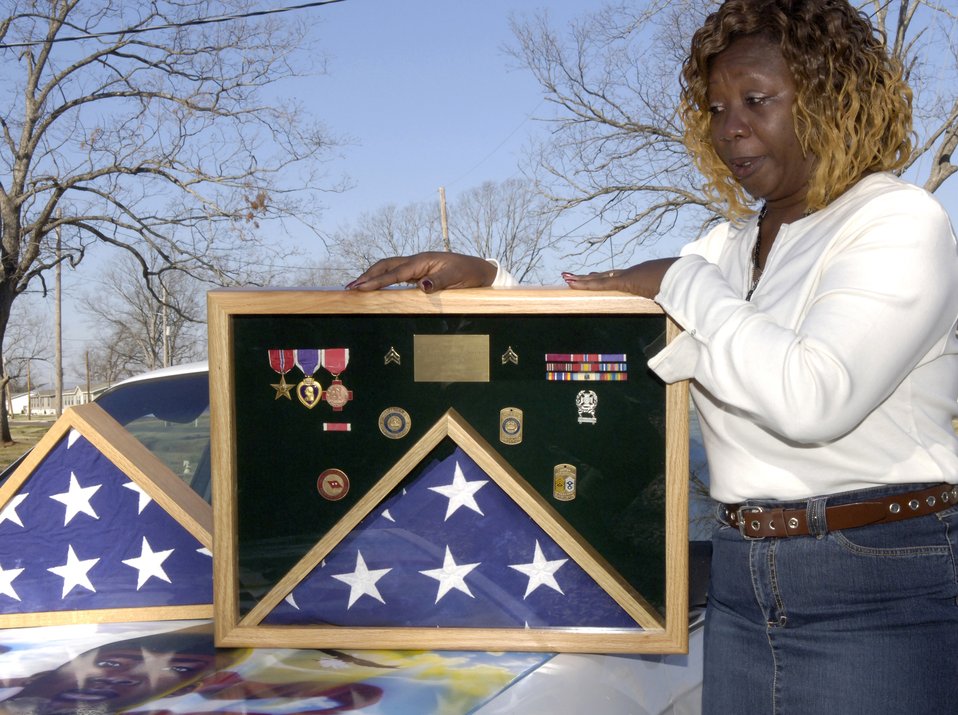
Retired Airman brings Soldier's mother peace

BARKSDALE AIR FORCE BASE, La. (AFPN) -- Denise Godbolt, mother of the late Army Sgt. Lee Myles Godbolt, received two new shadow boxes Feb 8. The boxes replaced the ones damaged in Hurricane Katrina. Retired Tech. Sgt. Mike Jarrett, woodcraft manager here, replaced the shadow boxes for Mrs. Godbolt.